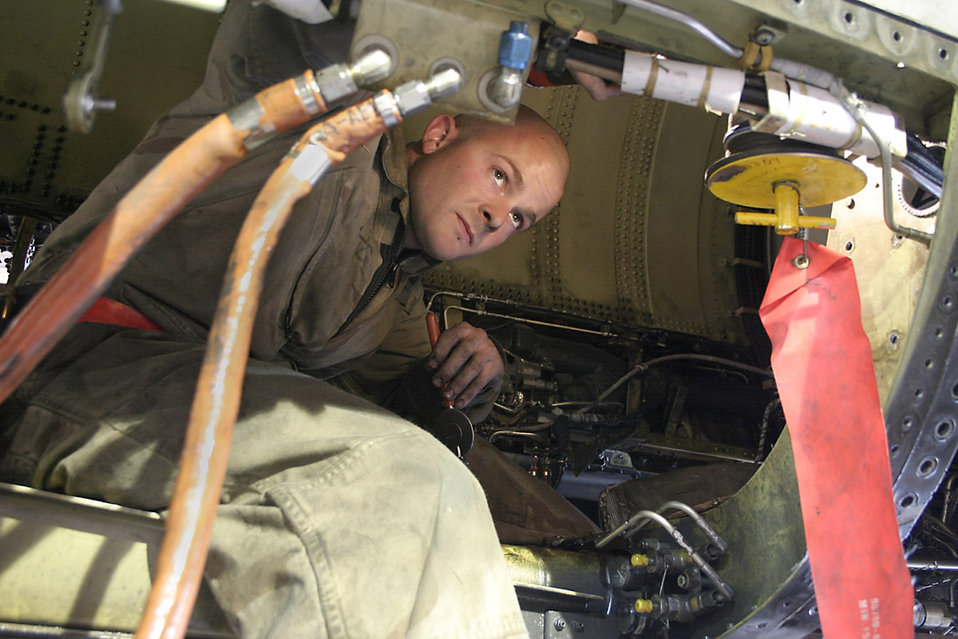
F-16 crew chiefs combat odds to keep jets in flight

BALAD AIR BASE, Iraq -- Senior Airman Lance Murphy inspects the engine bay of an F-16 Fighting Falcon. He is a crew chief with the 332nd Expeditionary Aircraft Maintenance Squadron here.